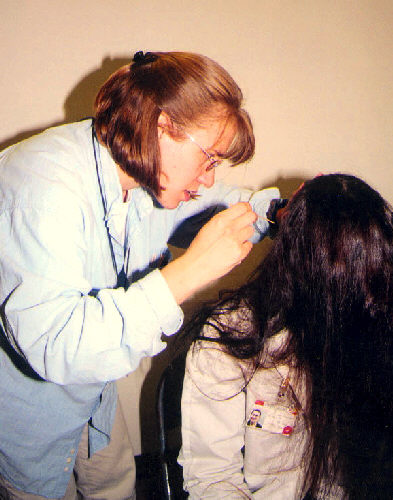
EIS (Epidemic Intelligence Service) officer screening person for head lice.